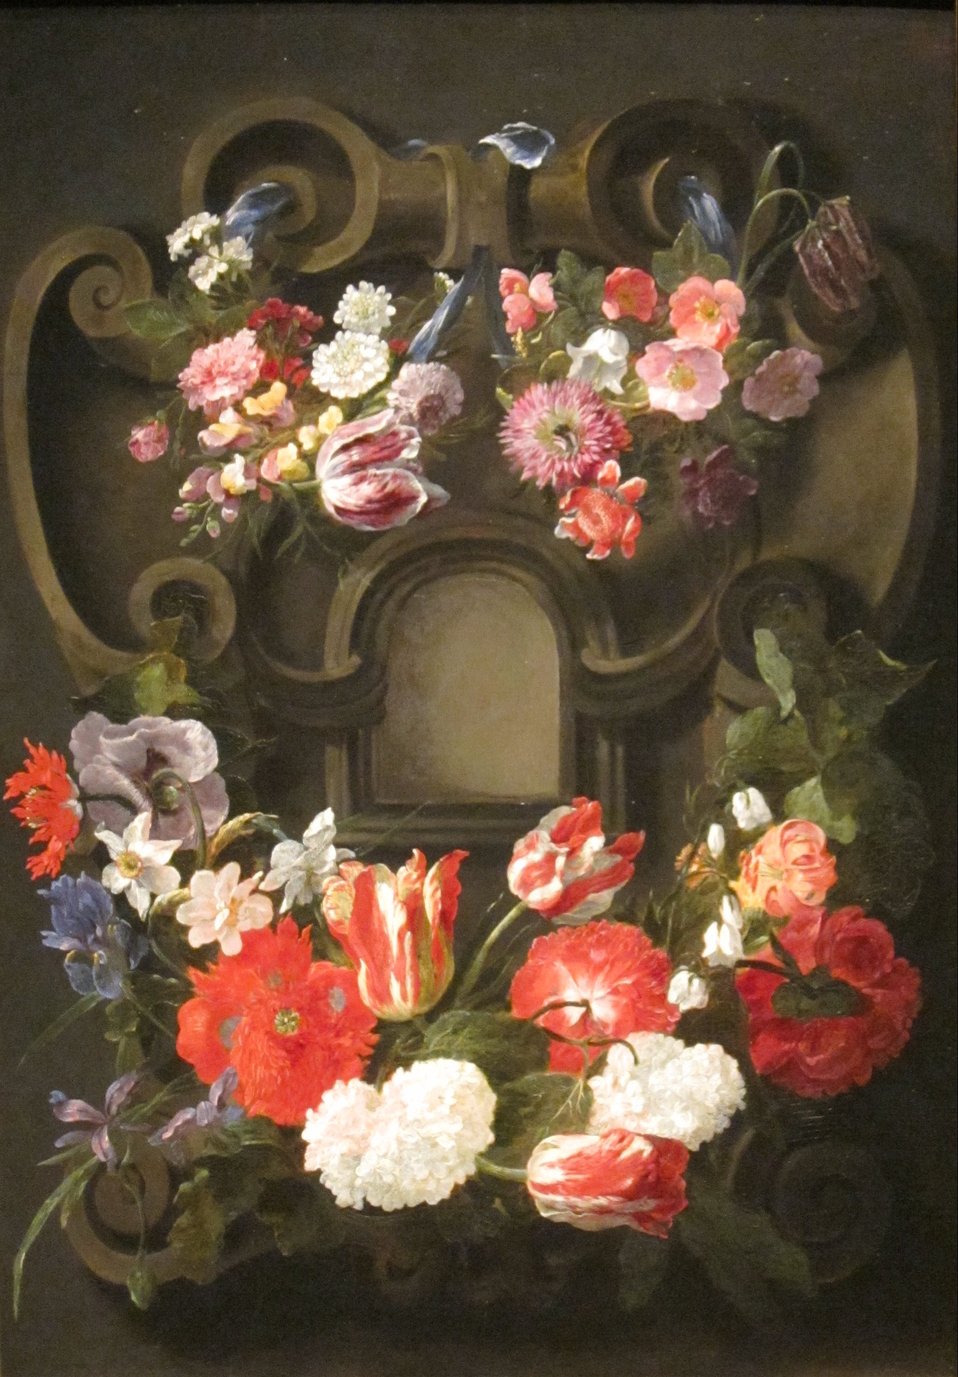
Garland of Flowers, oil on wood panel painting by Jan Fyt, 1643, Dayton Art Institute